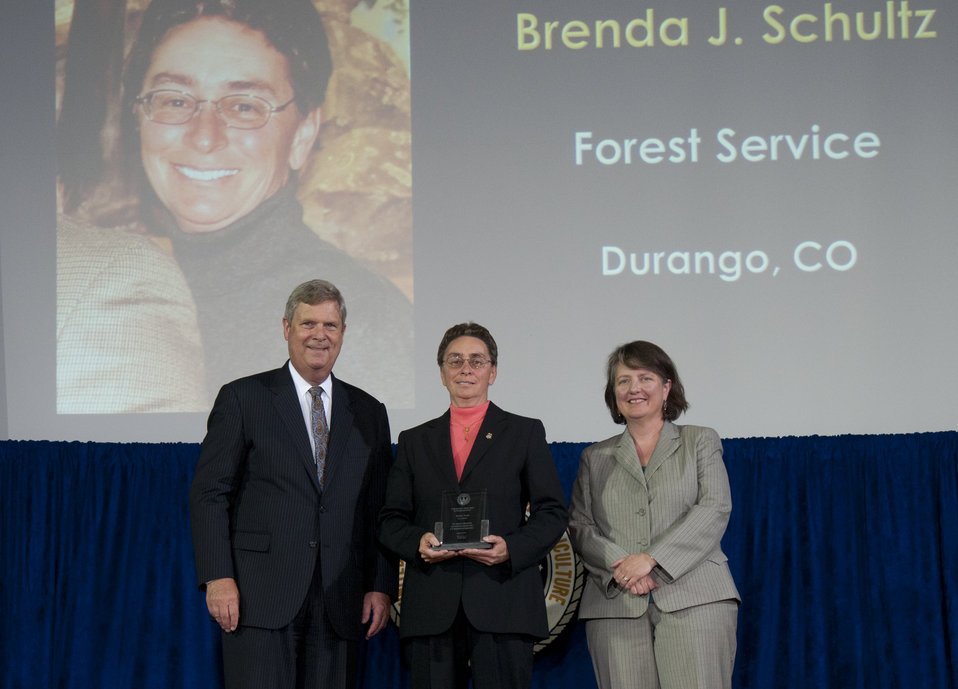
Agriculture Secretary Tom Vilsack and Agriculture Deputy Secretary Kathleen Merrigan present the Secretary’s Honor Award for Personal and Professional Excellence to U.S. Forest Service (FS) employee Brenda J. Schultz at the U.S. Department of Agriculture (USDA) 64th Annual Honor Awards Ceremony in Washington, D.C. on Wednesday, Sept. 12, 2012. Shultz received her award for her dedication to excellence as a leader for the Forest Service in the area of wildland fire and arson investigation.